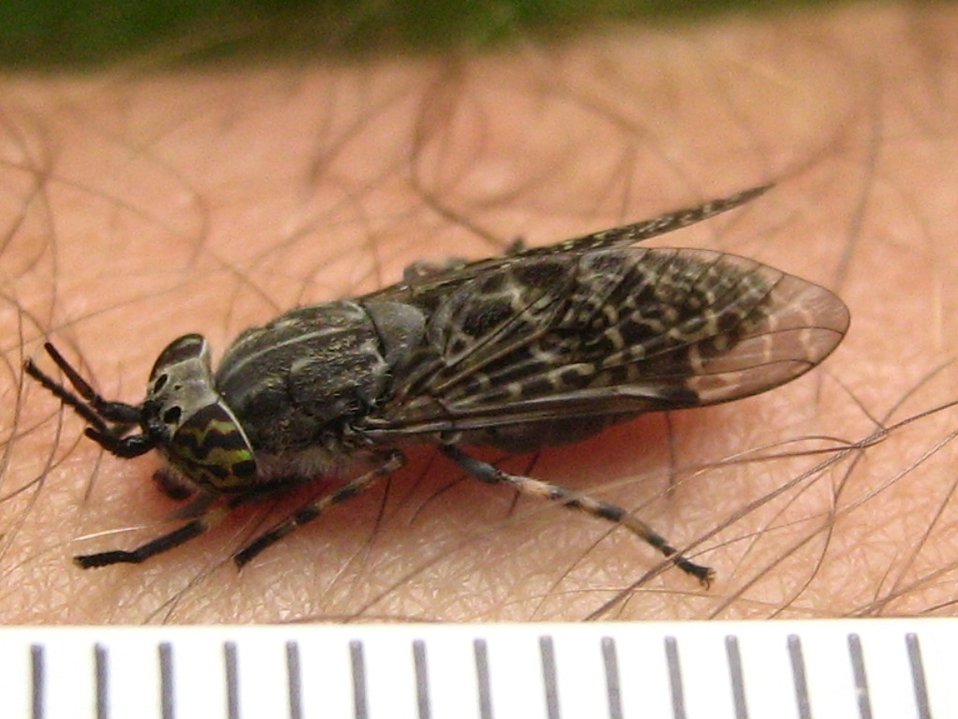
Deutsch: Haematopota pluvialis, die „Regenbremse“ oder „Blinde Fliege“. Früherer wiss. Name Chrysozona pluvialis L.. Fotografiert in einem Wald bei Nauen (Brandenburg). Zum Größenvergleich ist am unteren Bildrand die Millimetereinteilung eine Lineales zu sehen.